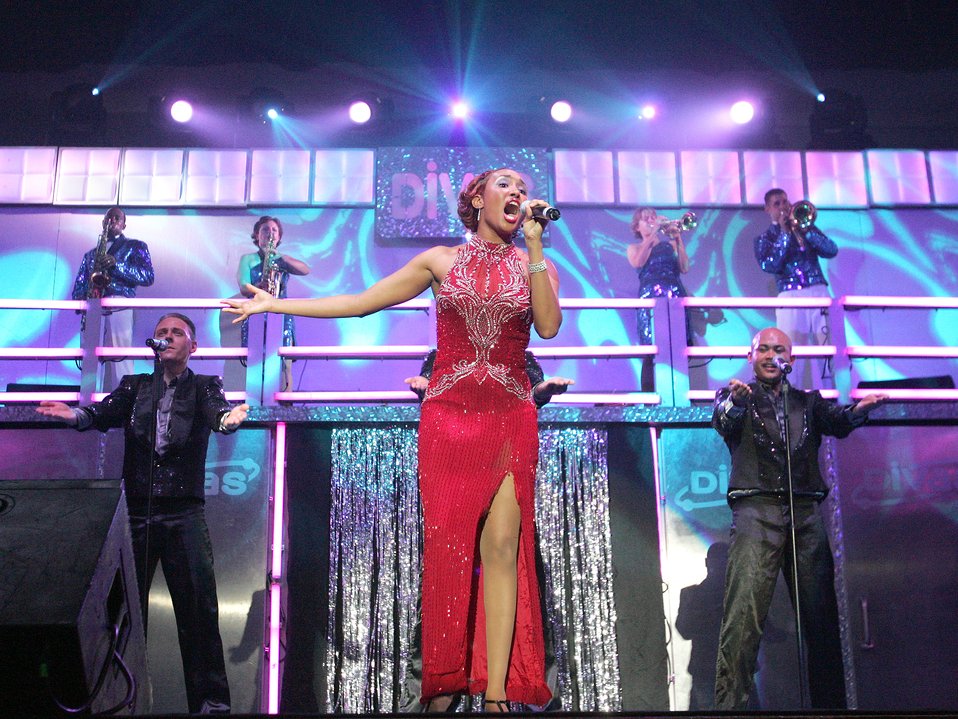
A woman singing on stage

Senior Airman Aisha Smith sings a Gladys Knight medley during the last performances of the 2005 Tops In Blue cast at the Bob Hope Theater at Lackland Air Force Base, Texas, March 15 to 17, 2006. Airman Smith is a public health journeyman at Nellis AFB, Nev.